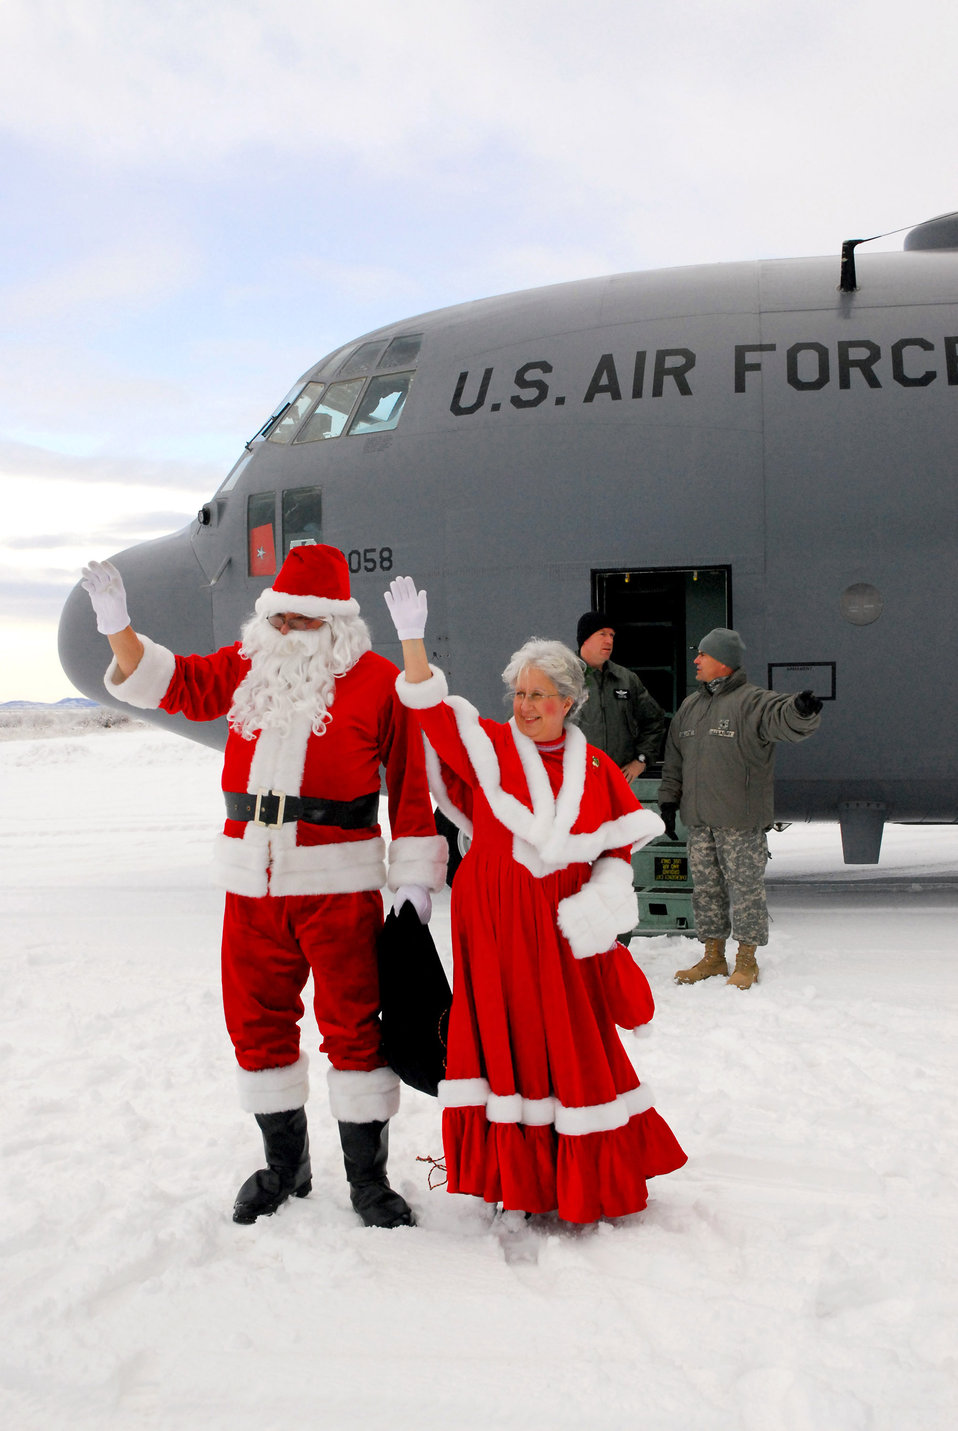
Here comes Santa Claus

Santa and Mrs. Claus disembark from an Alaska Air National Guard C-130 Hercules that brought them to Togiak, Alaska, Nov. 13 for Operation Santa Claus. Air Guard members are bringing Christmas early to children in remote Alaskan villages.